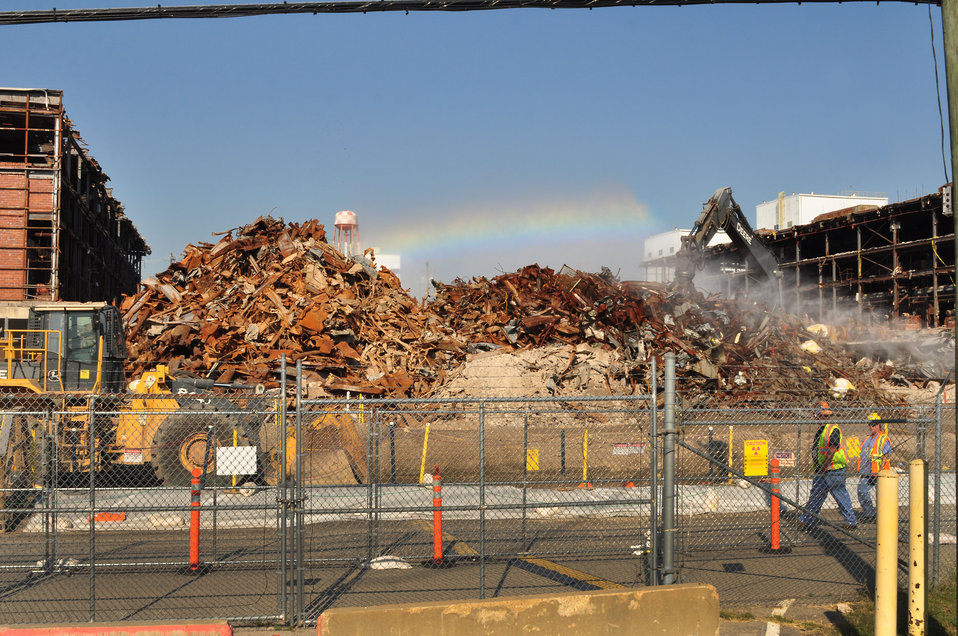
Oak Ridge Finds Ways to Remove K-25 Faster, Cheaper

K-25, once the world’s largest building under one roof, reflects less of its former title every day. Due to the partnership between the U.S Department of Energy (DOE) Office of Environmental Management (EM) cleanup team and Oak Ridge’s prime environmental management contractor, URS | CH2M Oak Ridge, LLC (UCOR), the 44-acre, multi-level uranium-enrichment superstructure is in the advanced stages of demolition.